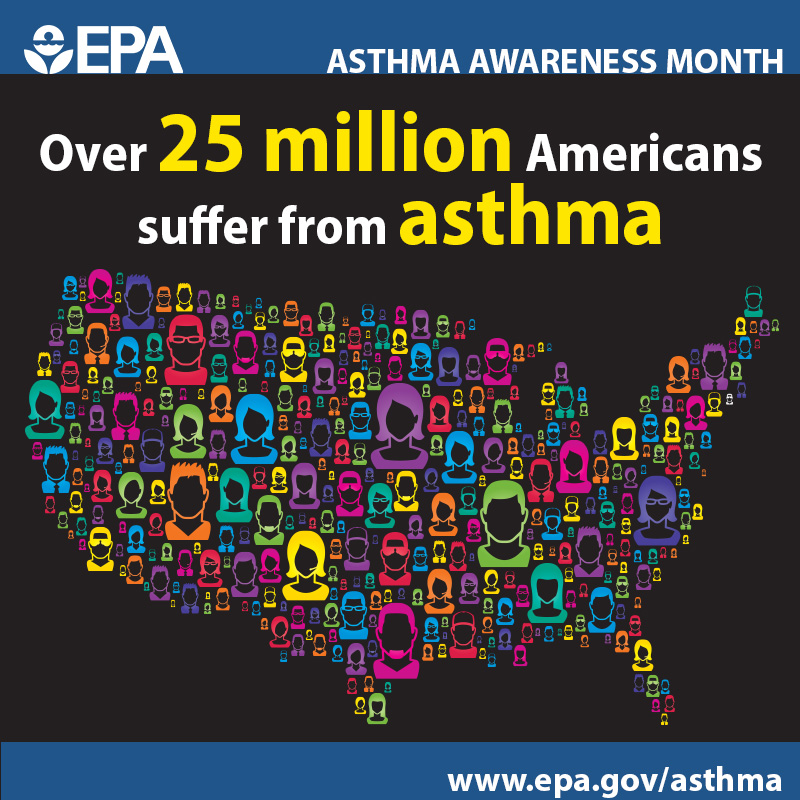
25 Million Americans

Over 25 million Americans suffer from asthma. But, it can be controlled through medical treatment and management of environmental triggers.